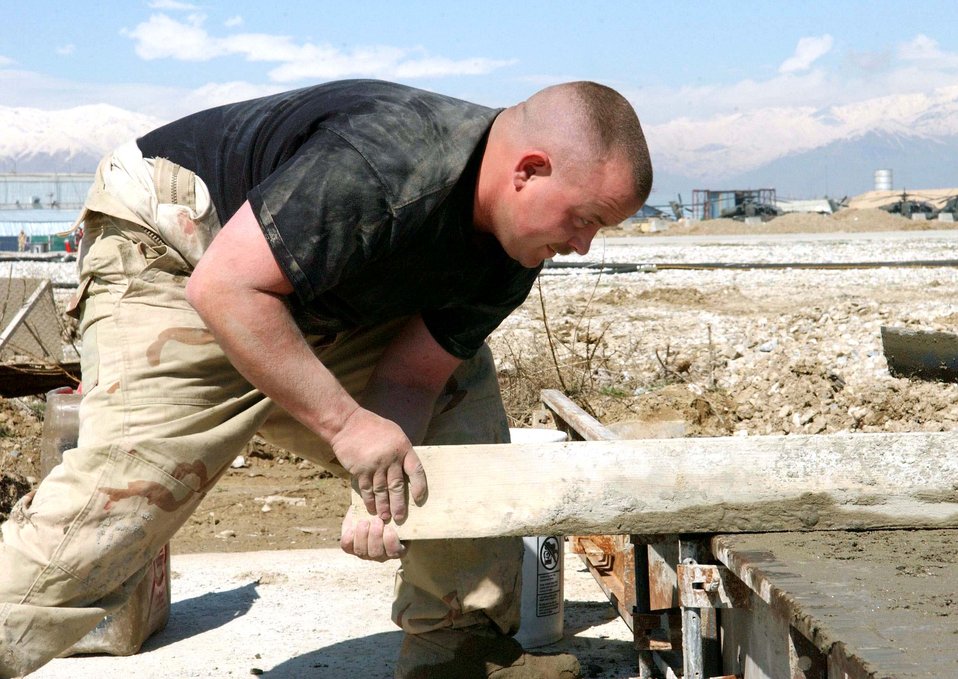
Civil engineers prepare to 'close the gaps' on Bagram's flightline

BAGRAM AIR BASE, Afghanistan -- Senior Airman Chris Bender levels the concrete in one of the 28 cast runway replacement slabs destined for the 9,800-foot runway here. He is assigned to the 455th Expeditionary Civil Engineer Squadron.